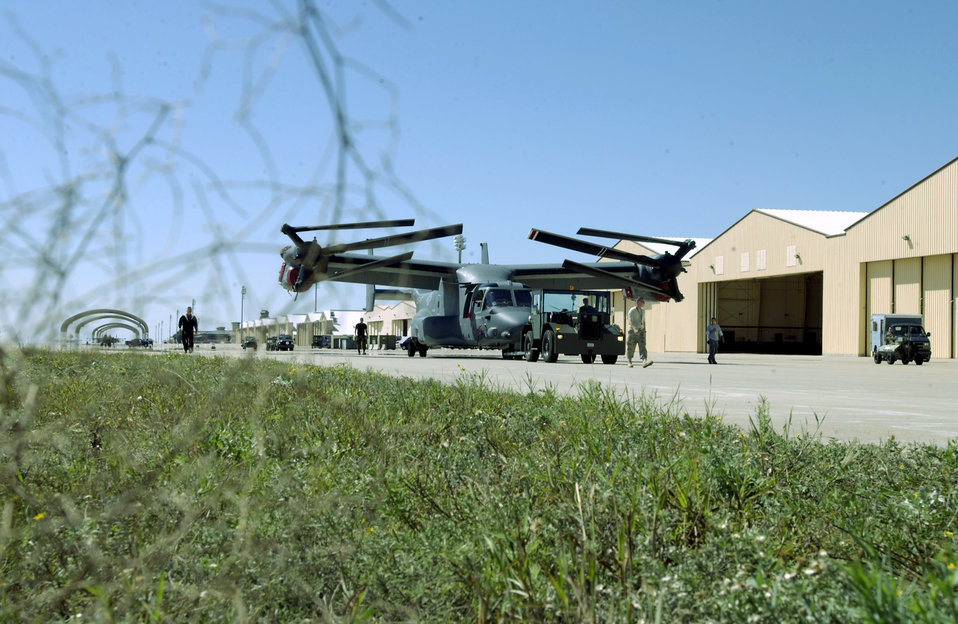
'Fit' to fight

A tumbleweed frames a CV-22 Osprey being towed Sept. 25 at Cannon AFB, N.M. Cannon AFB will be transferred from Air Combat Command to Air Force Special Operations Command Oct. 1. CV-22s are among the special operations aircraft that will be assigned to the 27th Special Operations Wing which -- as the 27th Fighter Wing -- flew F-16 Fighting Falcons at the base from 1995 to 2007.